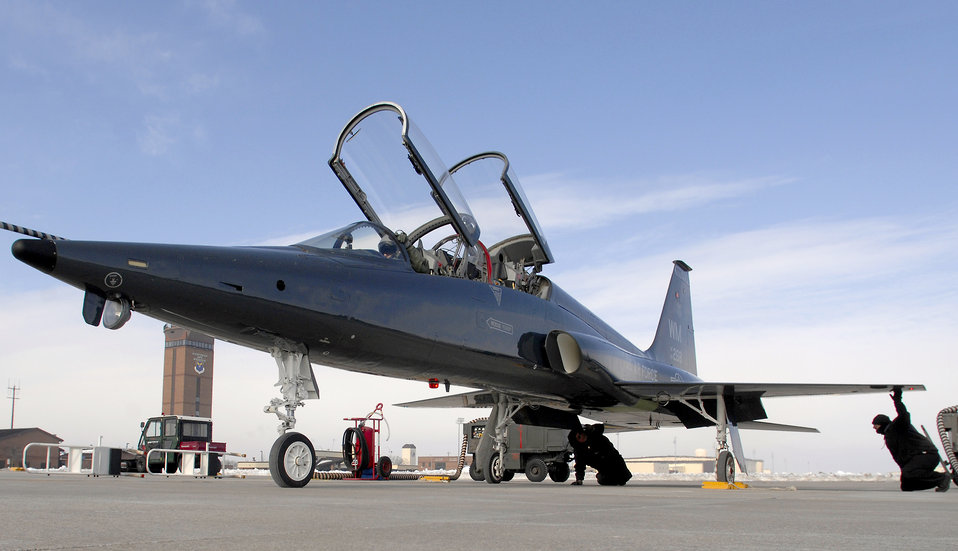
T-38 Talons ready for flight

Civilian crew chiefs with the 394th Combat Training Squadron perform their final preflight checks on a T-38 Talon prior to launch Jan. 26, 2011, at Whiteman Air Force Base, Mo.